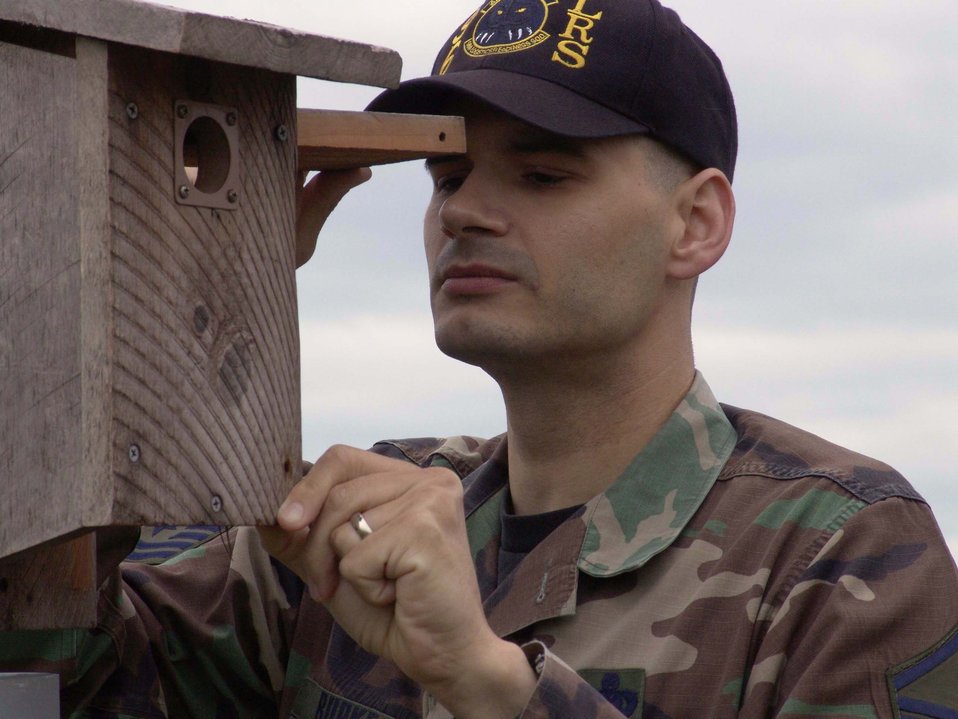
Fuels specialist is 'for the birds'

EGLIN AIR FORCE BASE, Fla. -- Master Sgt. William Burke has made about 25 birdhouses here for Eastern Bluebirds. He is a fuels specialist with the 96th Logistics Readiness Squadron.